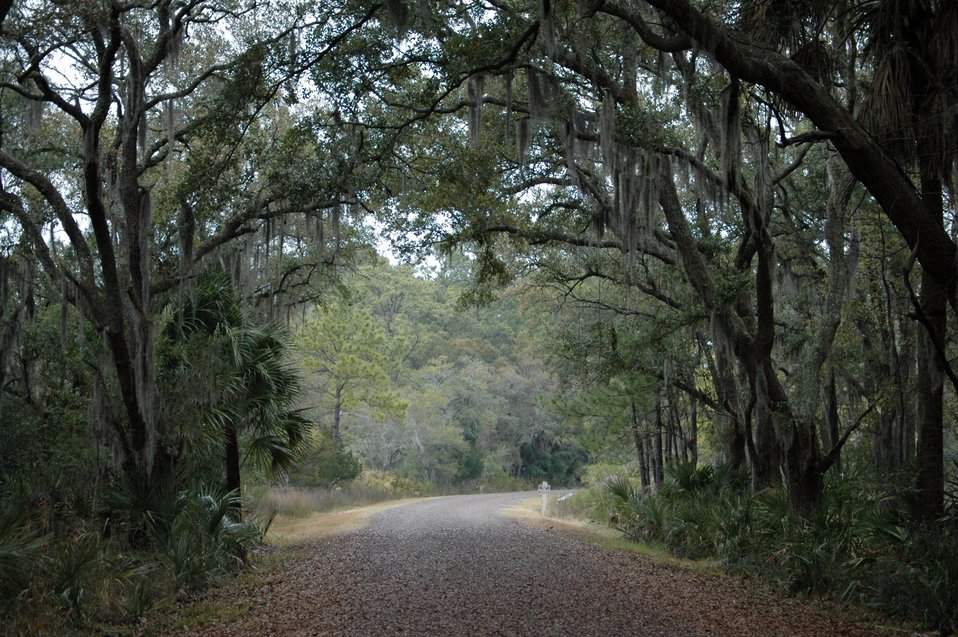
Pinckney Island Trails

Pinckney Island National Wildlife Refuge, South Carolina.